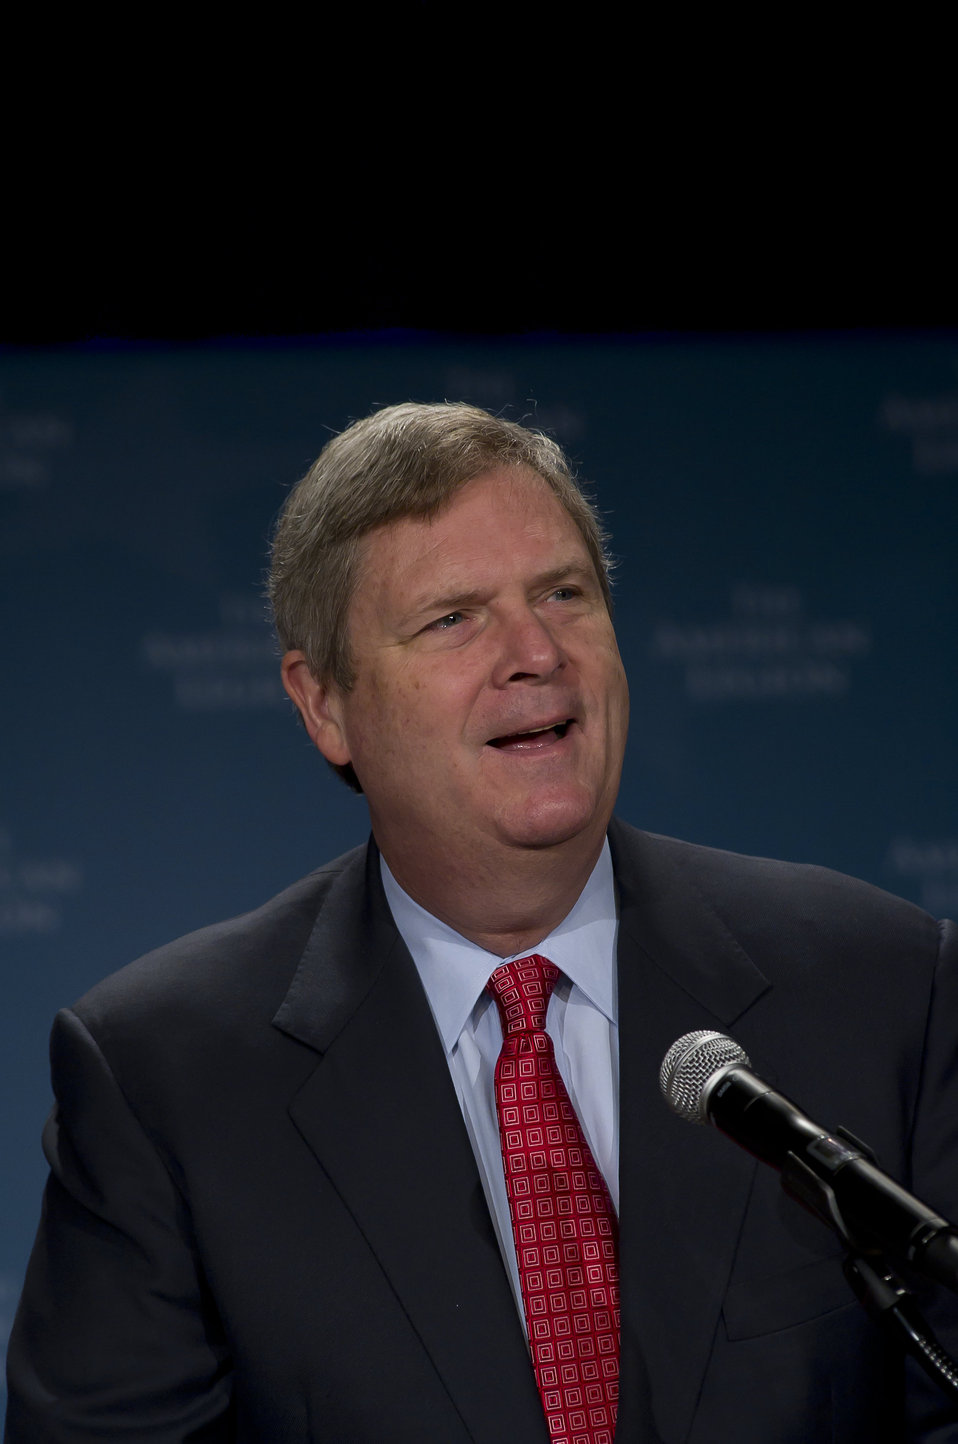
U.S. Secretary of Agriculture Tom Vilsack speaks before the American Legion prior to signing a memorandum of understanding with the American Legion which will help our Nation's veterans and transitioning military service members find positions that promote agriculture, animal and plant health, food safety, nutrition, conservation and rural communities at the Washington Hilton in Washington, D.C., on Tuesday February 28, 2012.